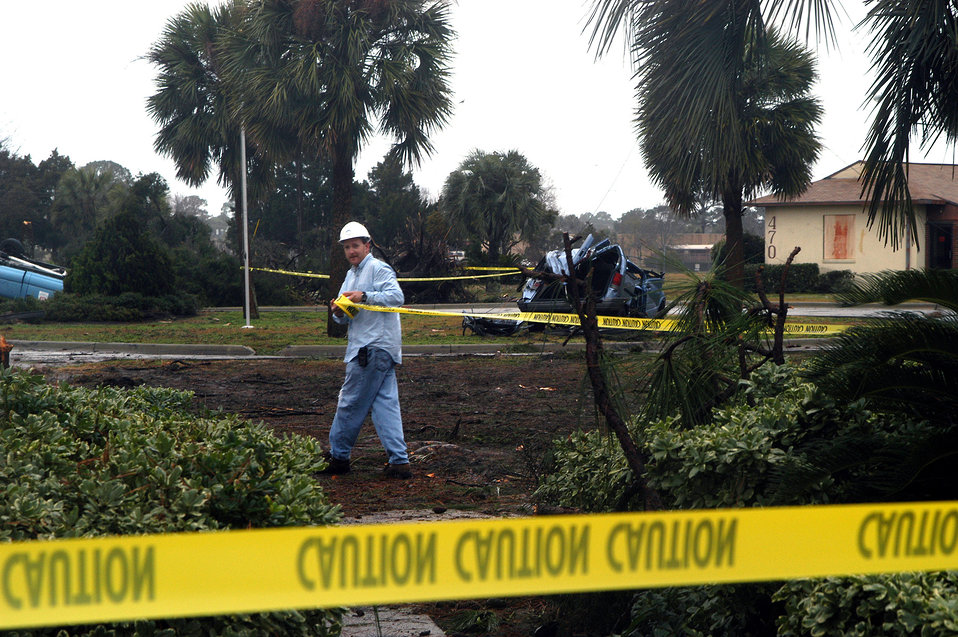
Tornado strikes Tyndall

TYNDALL AIR FORCE BASE, Fla. - Jason Waltman, a base contractor, stretches caution tape around the 1st Air Force A-1 building here that was damaged by a tornado Feb. 16, 2003. The tornado caused an estimated $250,000 worth of damage to 10 facilities and more than 30 vehicles in the area. No one was injured and base operations were uninterrupted.